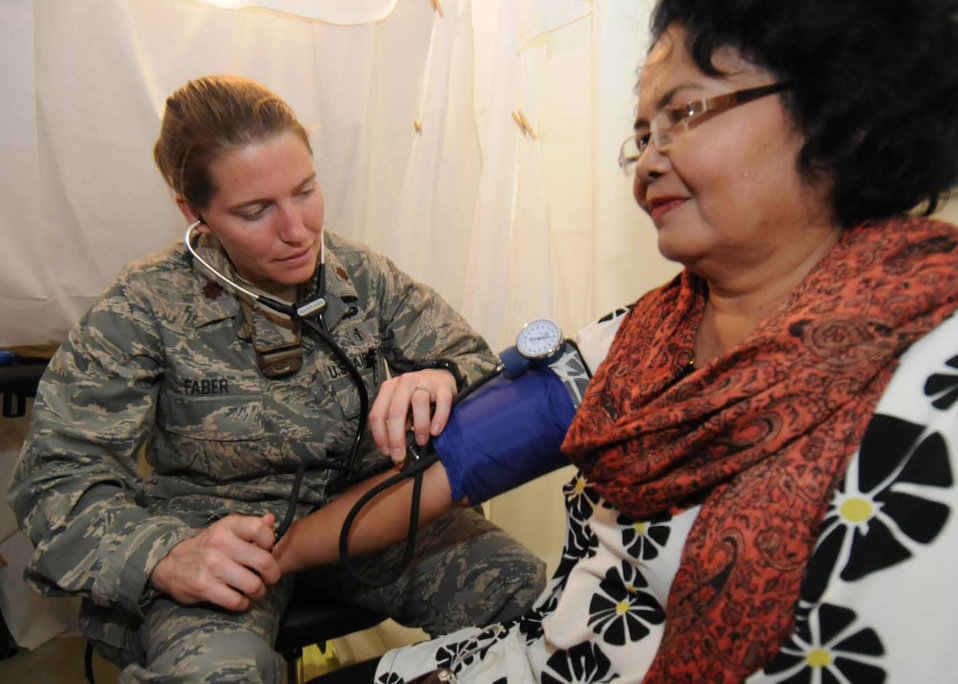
Earthquake relief

Maj. Shannon Faber checks a patient's blood presure during a medical assessment at a mobile field hospital in Padang, Indonesia, Oct. 8. Major Faber, an emergency medical doctor from the 3rd Medical Operations Squadron at Elmendorf Air Force Base, Alaska, is deployed here with an Air Force humanitarian assistance rapid response team.